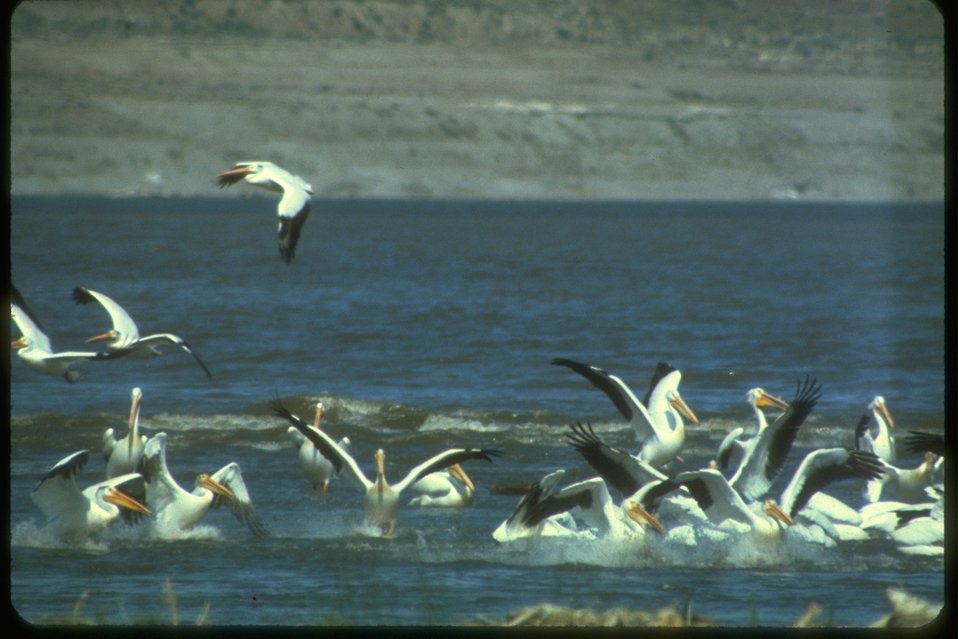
White Pelicans